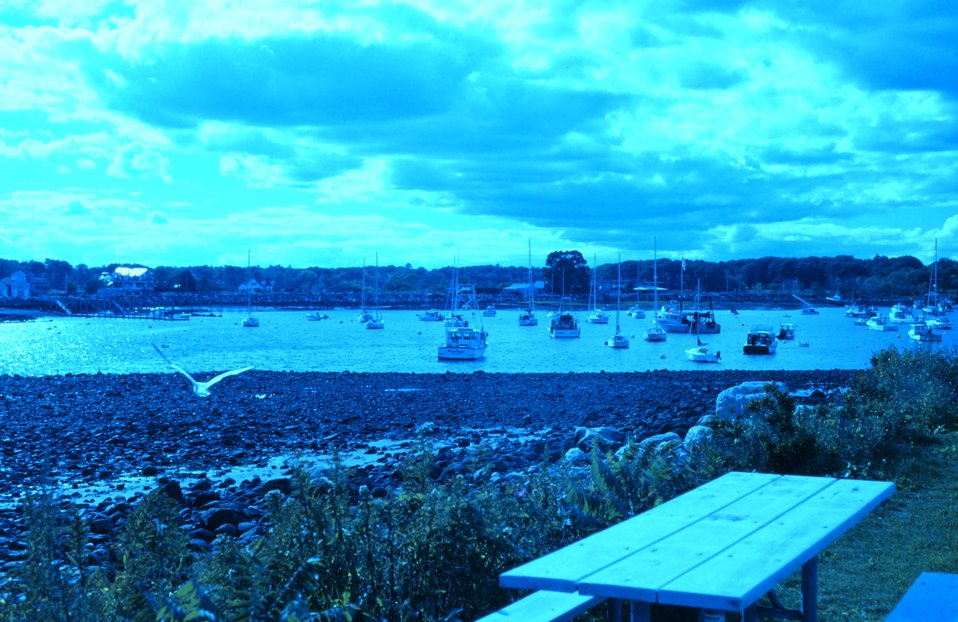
A view of the harbor at Odiorne Point State Park.